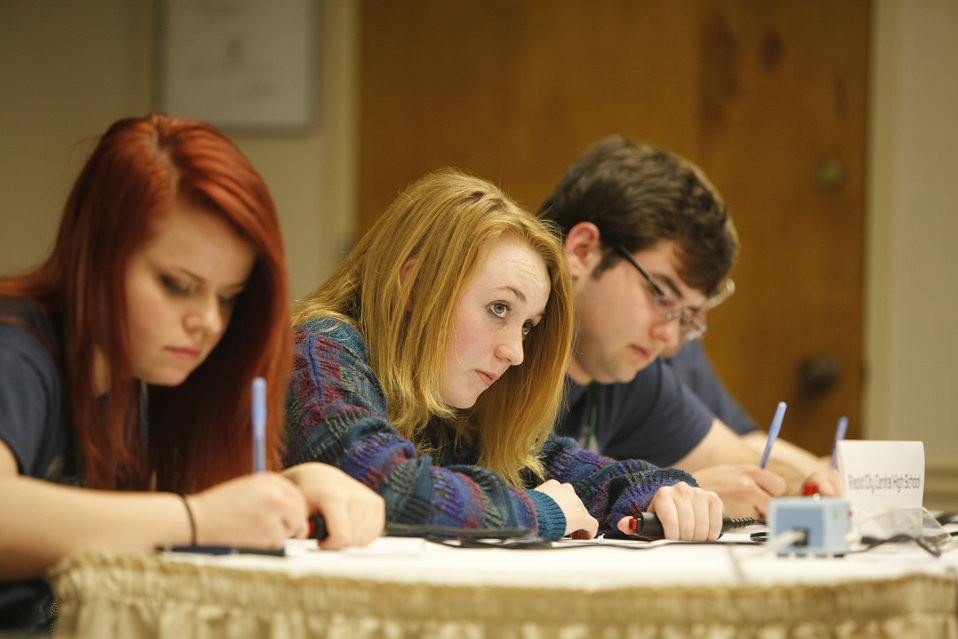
Students from the Zane Trace Local School in Chillicothe, OH competition of the 2013 National Science Bowl in Washington, DC.

The Department of Energy created the National Science Bowl in 1991 to encourage students to excel in mathematics and science and to pursue careers in these fields.